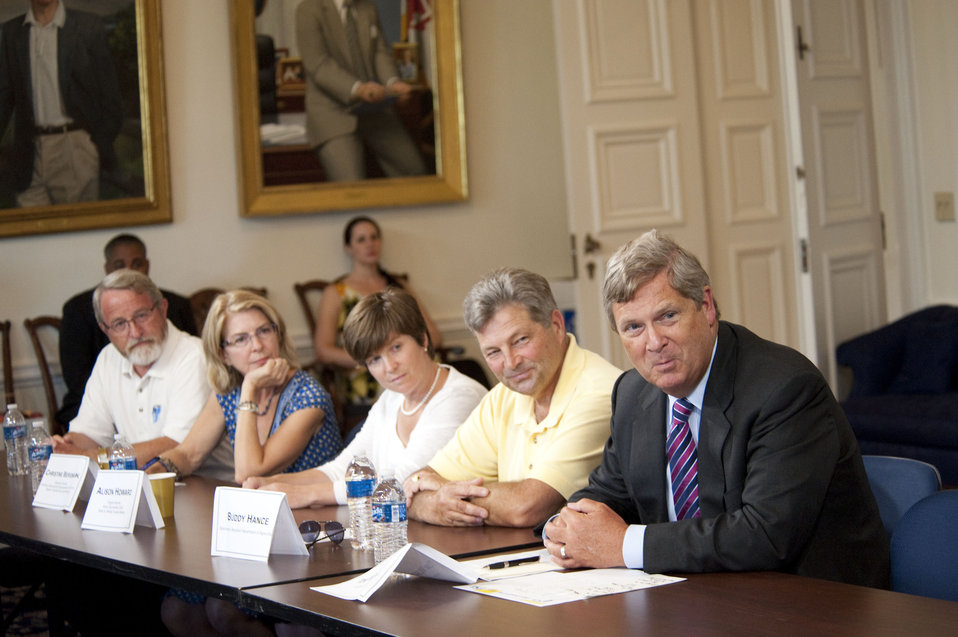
Agriculture Secretary Tom Vilsack meeting with Maryland Agricultural Leaders for a round table discussion in Annapolis, MD, on Thursday, July 21, 2011.